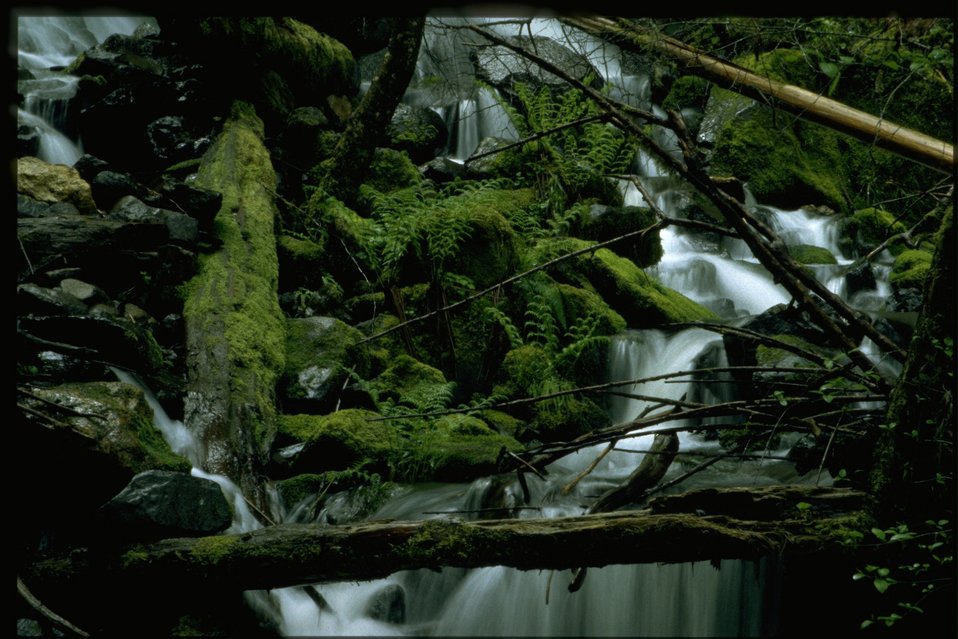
Swiftwater stream.